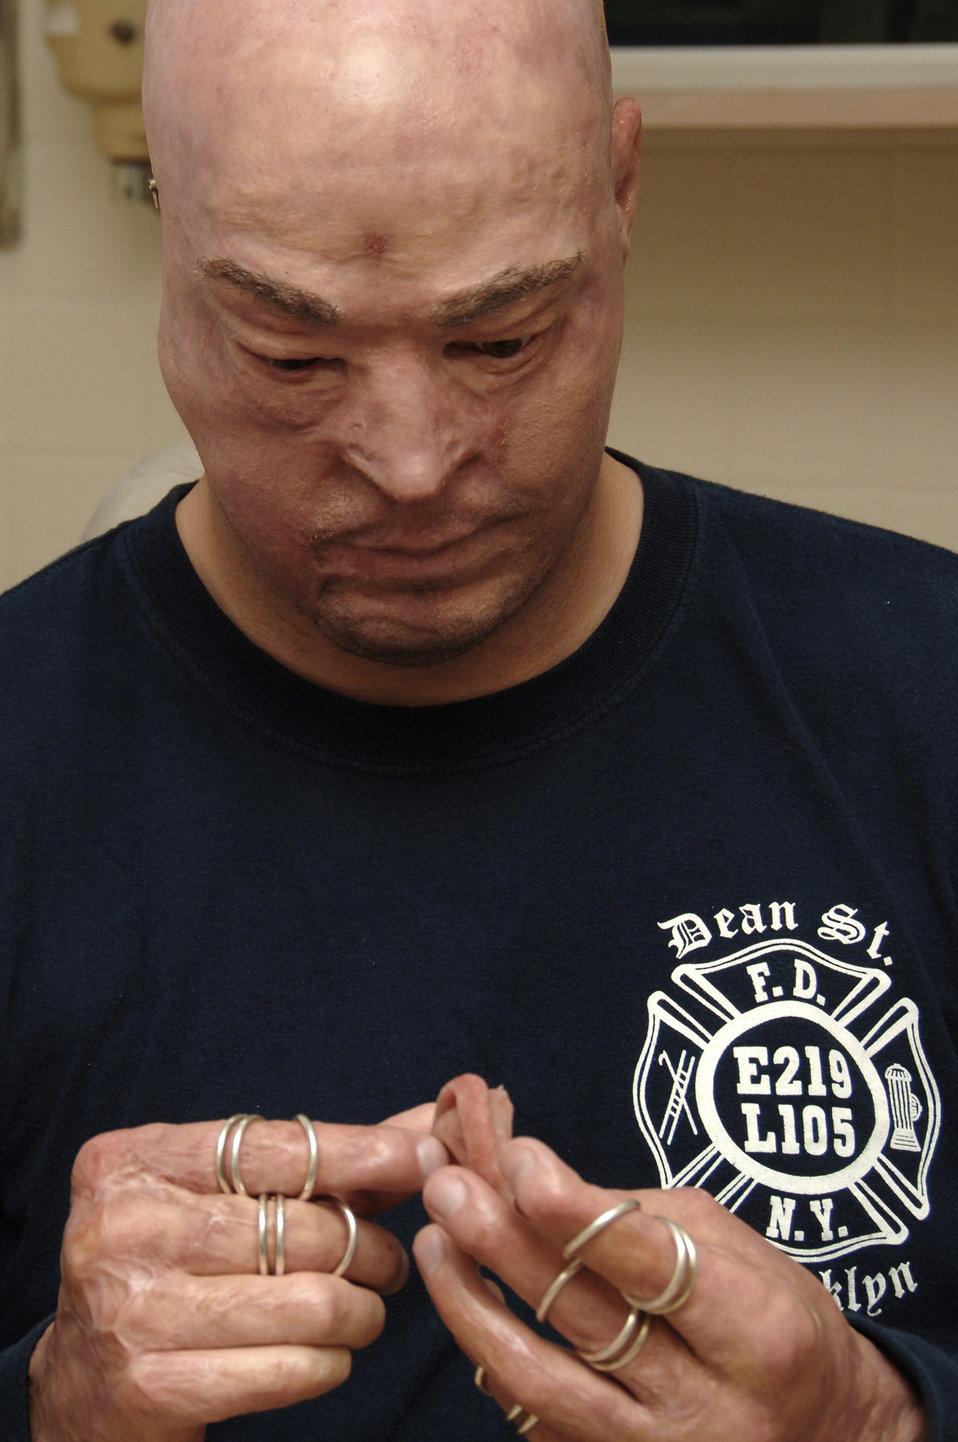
Wounded pilot fitted for new ears

Marine Capt. Ryan Voltin inspects his ear prosthesis prior to placement May 7, 2010, at the MacKown Dental Clinic at Lackland Air Force Base, Texas. Captain Voltin was wounded in a training accident in May 2007 that left him with severe burns and loss of most of his ears and his left leg.